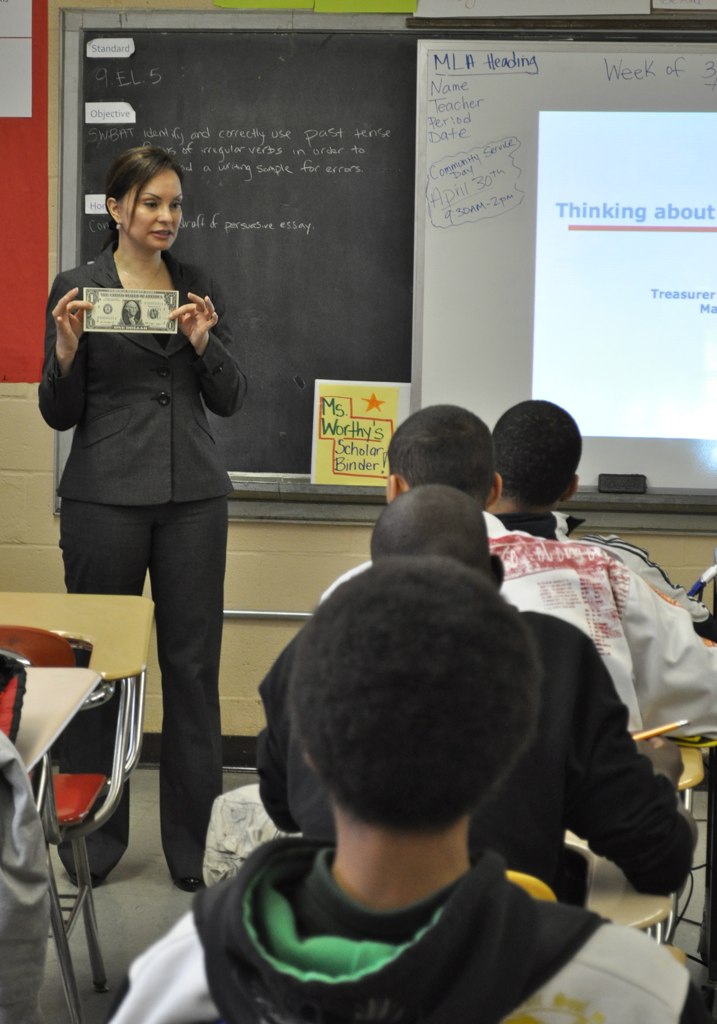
Treasurer Rios Guest Teaching Personal Finance

Treasurer Rosie Rios describes her job, including her signature on printed money, to a 9th grade class at Springarn Senior High School in Washington, D.C.